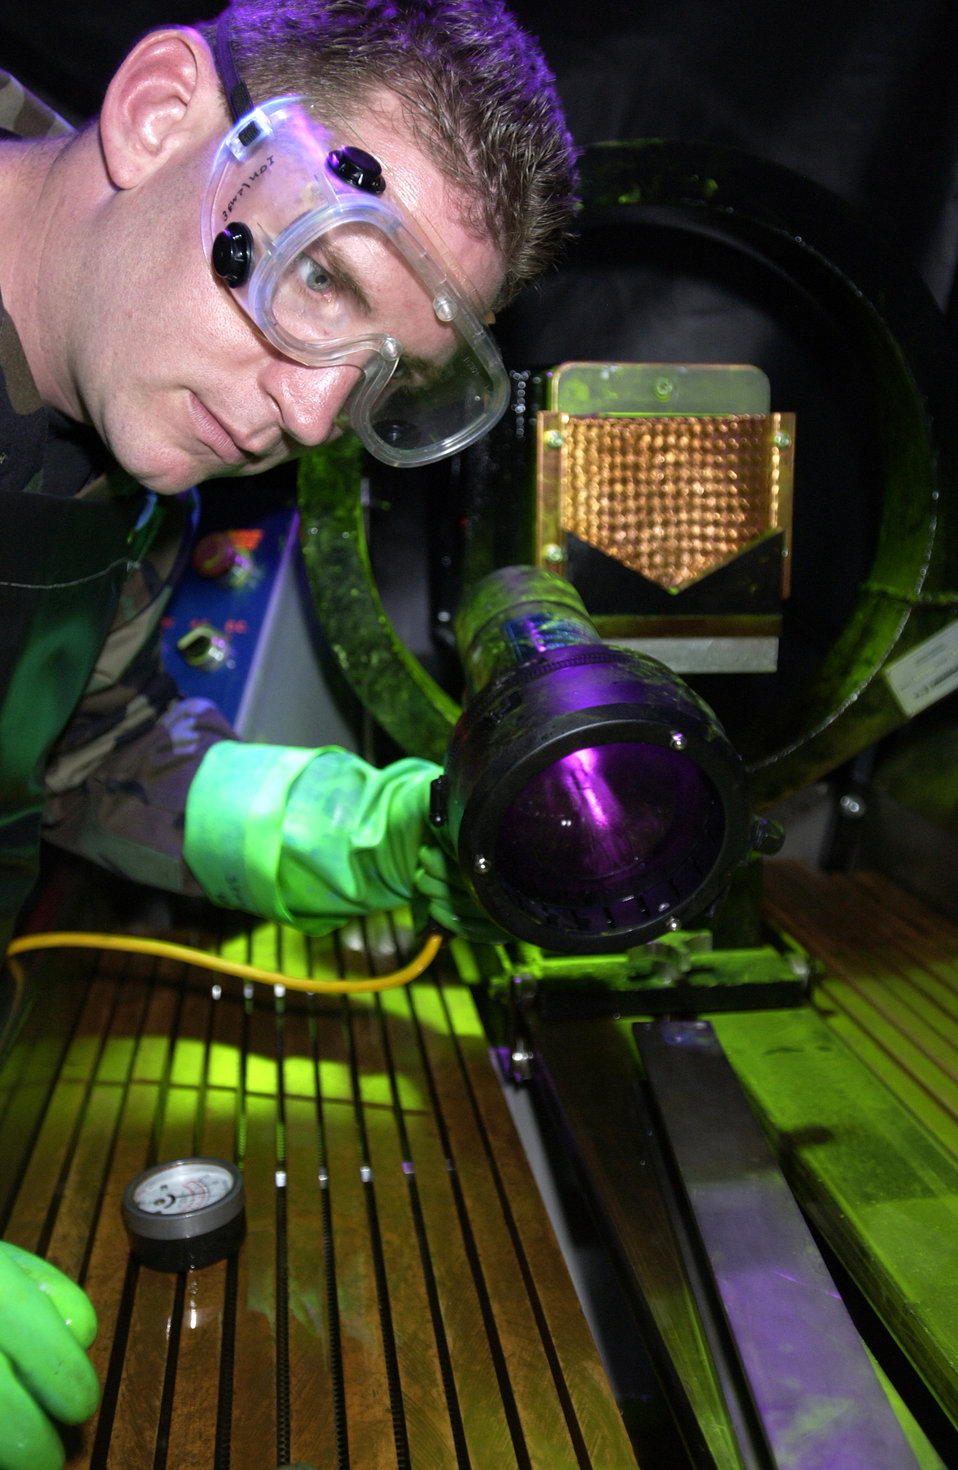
Elmendorf unit saves thousands

Tech. Sgt. Joseph Goff inspects an aircraft part for abnormalities before they become a problem at Elmendorf Air Force Base, Alaska. Sergeant Goff is the 3rd Equipment Maintenance Squadron Nondestructive Inspection Laboratory section chief.